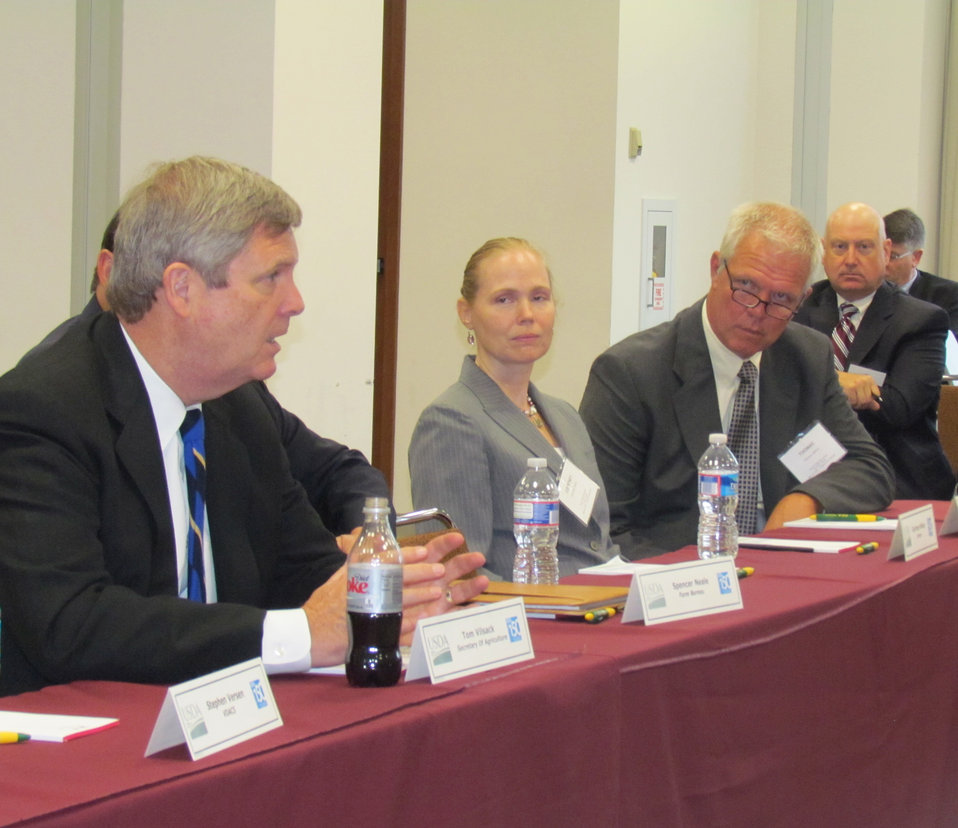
Agriculture Secretary Tom Vilsack addresses a roundtable group of farmers and ranchers producers in Richmond, VA., on Wednesday, May 23, 2012. Producers (left to right) Courtney Mailey, Thomas Adkins listen to Secretary Vilsack's remarks, USDA photo by Barbara Bowen.